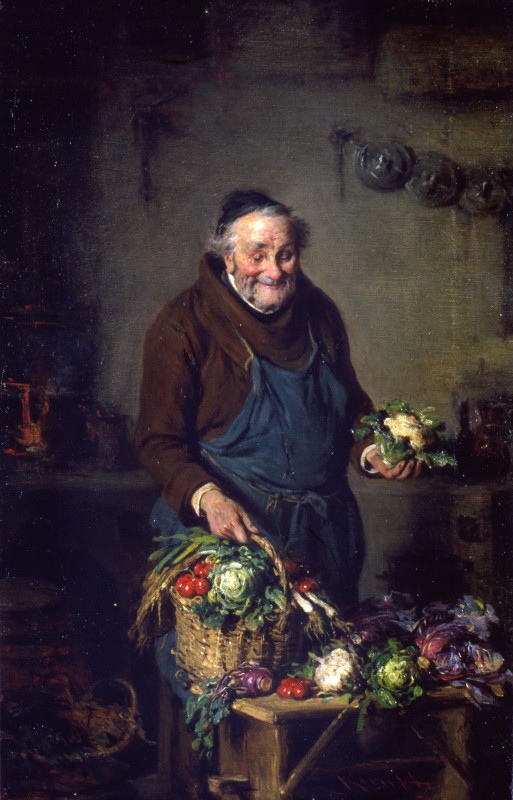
Artgate Fondazione Cariplo - Kern Hermann, Il frate in cucina